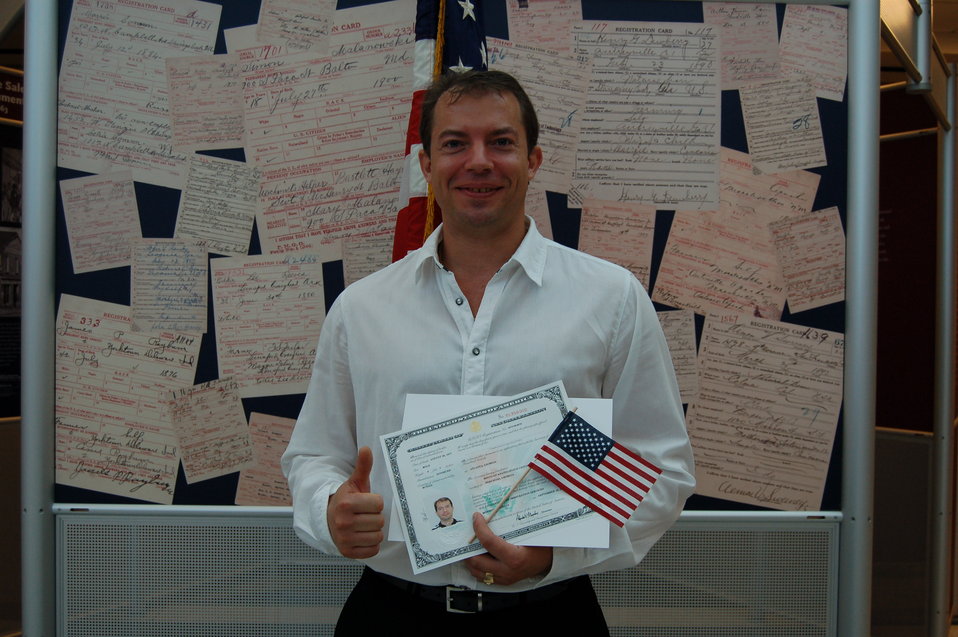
New Citizens